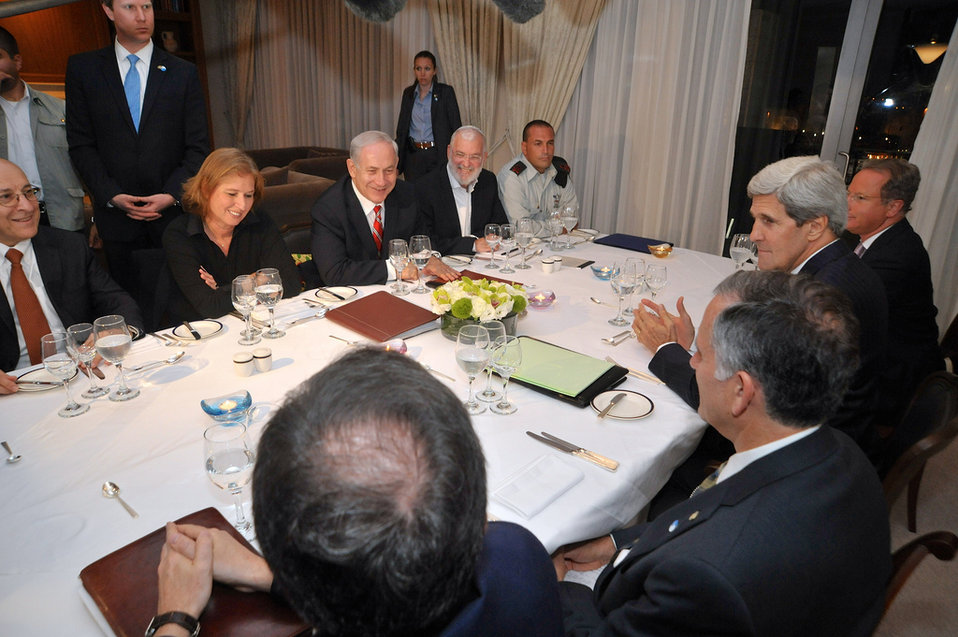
Secretary Kerry Dines With Israeli Prime Minister Netanyahu

U.S. Secretary of State John Kerry sits across from Israeli Prime Minister Benjamin Netanyahu before their two delegations enjoyed dinner in Jerusalem on June 29, 2013.